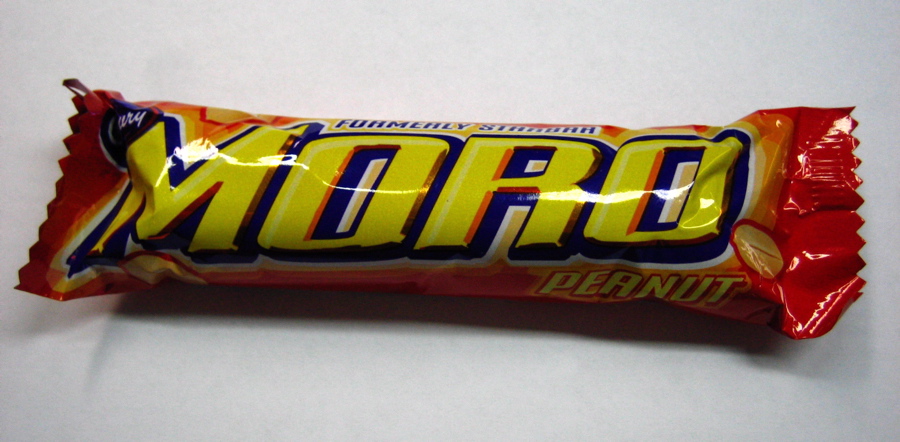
Moro Peanut, formerly Starbar